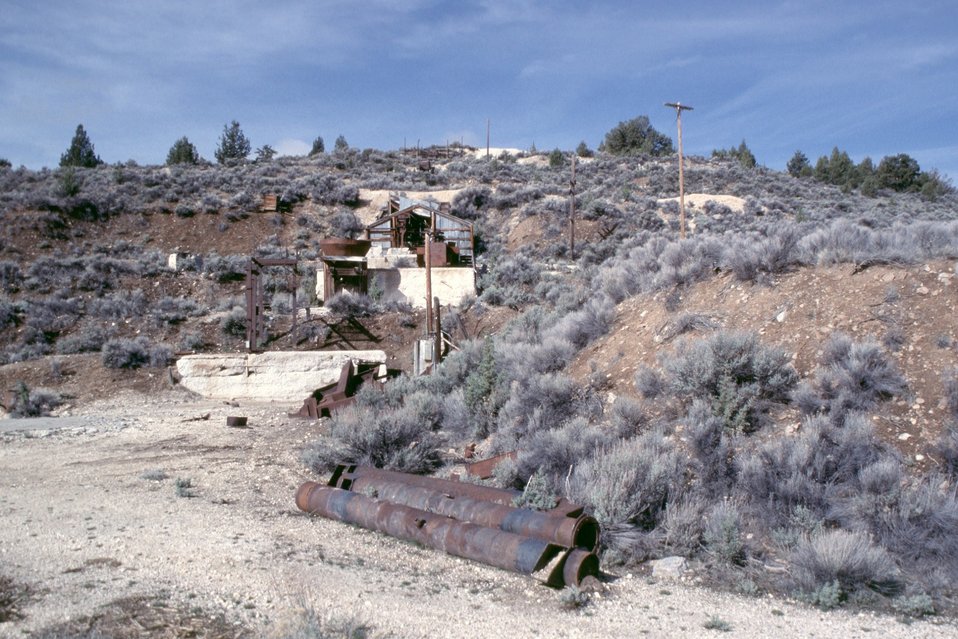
AML Glass Buttes, G5, Burns District In the foreground are metal tubes that were wrapped with copper wire to heat the mercury ore. The hillside has various levels where mercury ore was crushed into powder, the heavier powder was separated from the lighter powder, water was put into a large funnel to transport the reject powder away from the mill/retort area, and the heavier powder was heated in a retort.